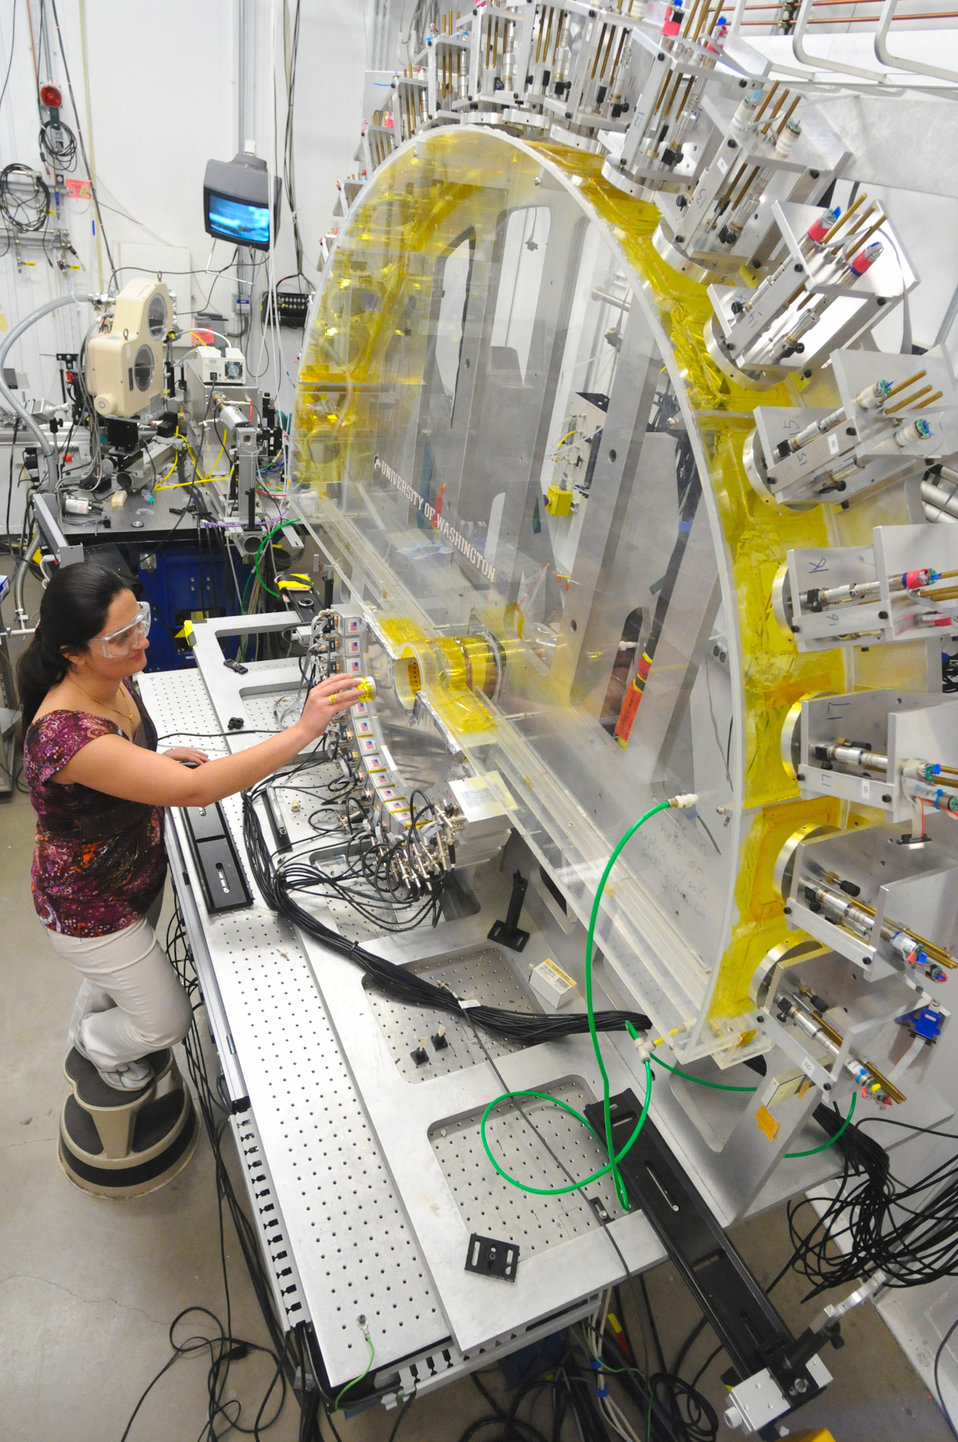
Argonne National Laboratory assistance materials scientist loads an in-situ-lithium-ion battery into the Low-Energy Resolution Inelastic X-ray (LERIX) system at the Advanced Photon Source(APS).

This multi-element x-ray scattering instrument is helping Argonne researchers to understand the fundamental mechanisms that limit the performance of batteries.The APS is one of several facilities at Argonne, other national labs and universities that form an integral part of the Joint Center for Energy Storage Research, a public-private partnership that aims to overcome critical scientific and technical barriers and create new breakthrough energy storage technologies.